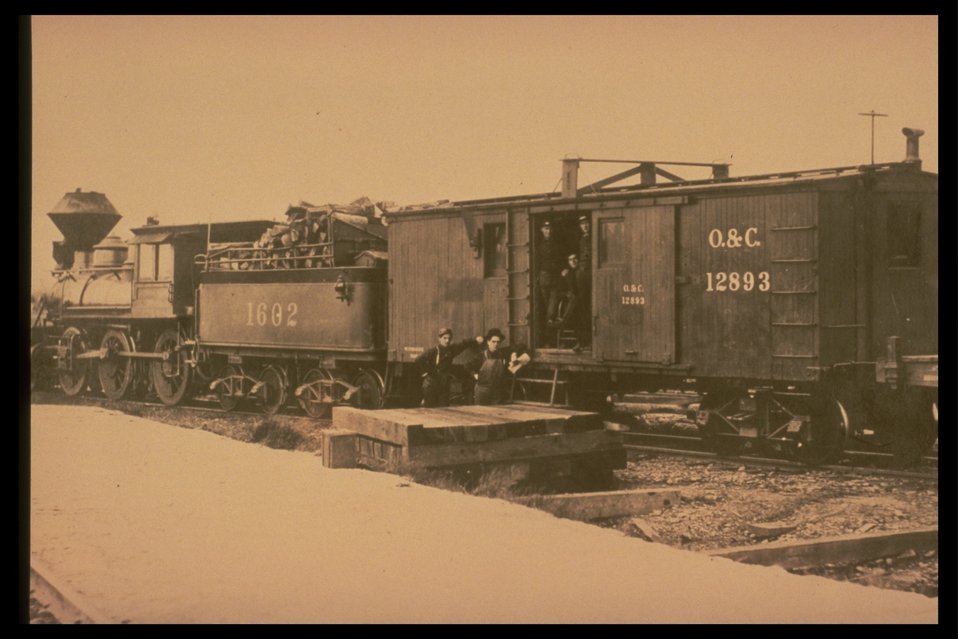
Black and white photo of an O & C train engine and box car with people posing.